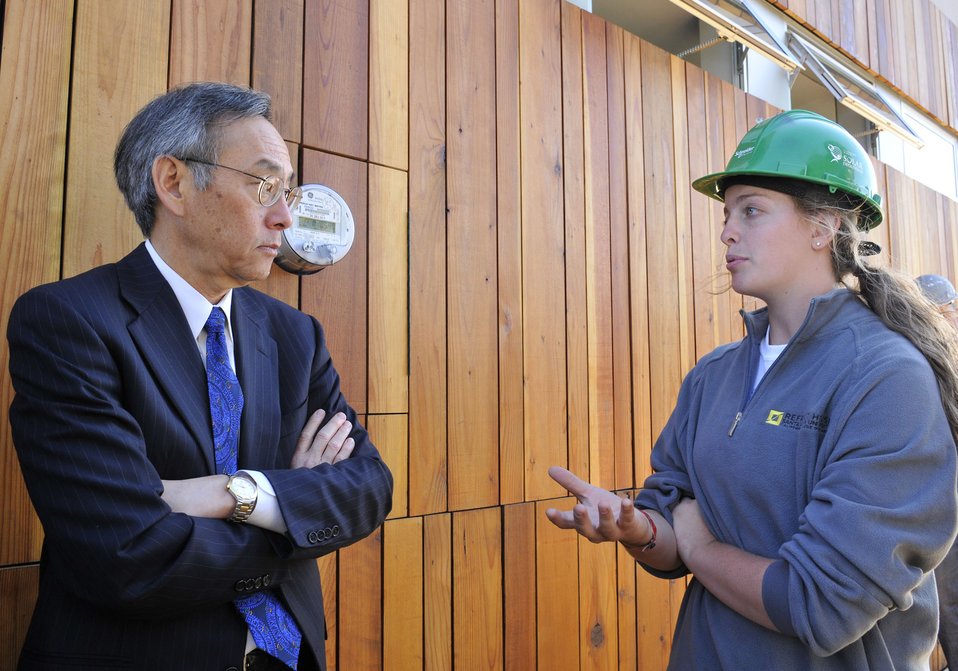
Solar Decathlon 2009 on the National Mall, with Sec. Chu

Solar Decathlon 09